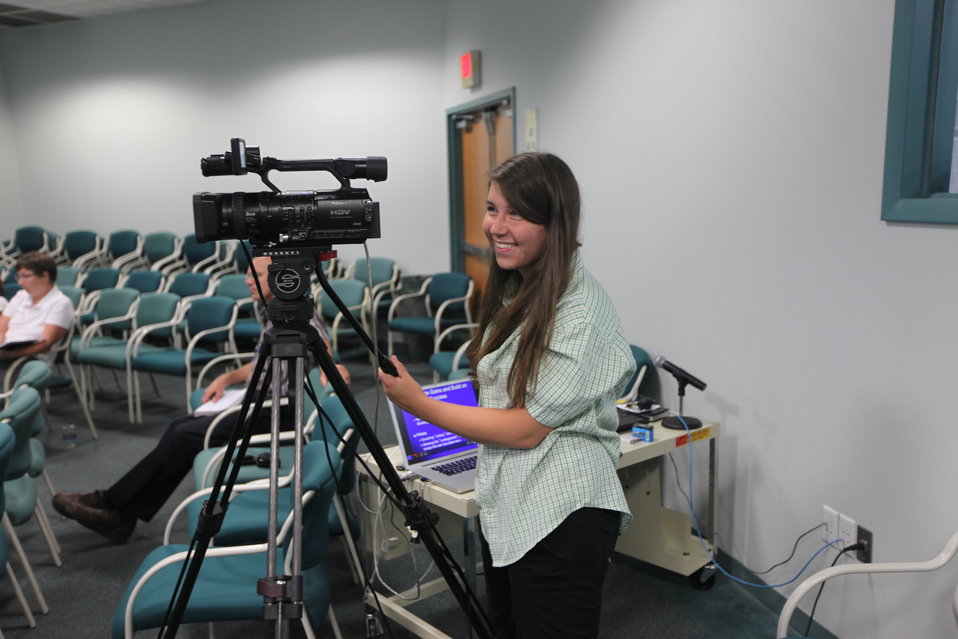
Working in audio/visual and broadcast production for the U.S. Fish and Wildlife Service

U.S. Fish and Wildlife Service